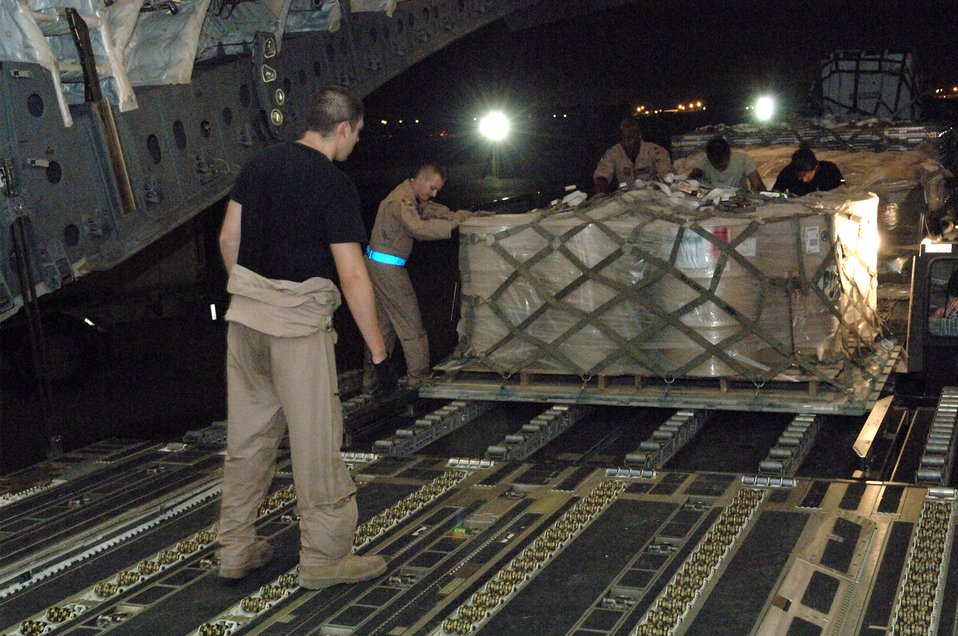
Team effort sets airlift standard

Senior Airman Stephen Knapp, 816th Expeditionary Airlift Squadron loadmaster, observes as team members from the 8th Expeditionary Air Mobility Squadron push a pallet of supplies onto a C-17 Globemaster III from a 60K loader here. Airman Knapp is deployed from McGuire Air Force Base, N.J.